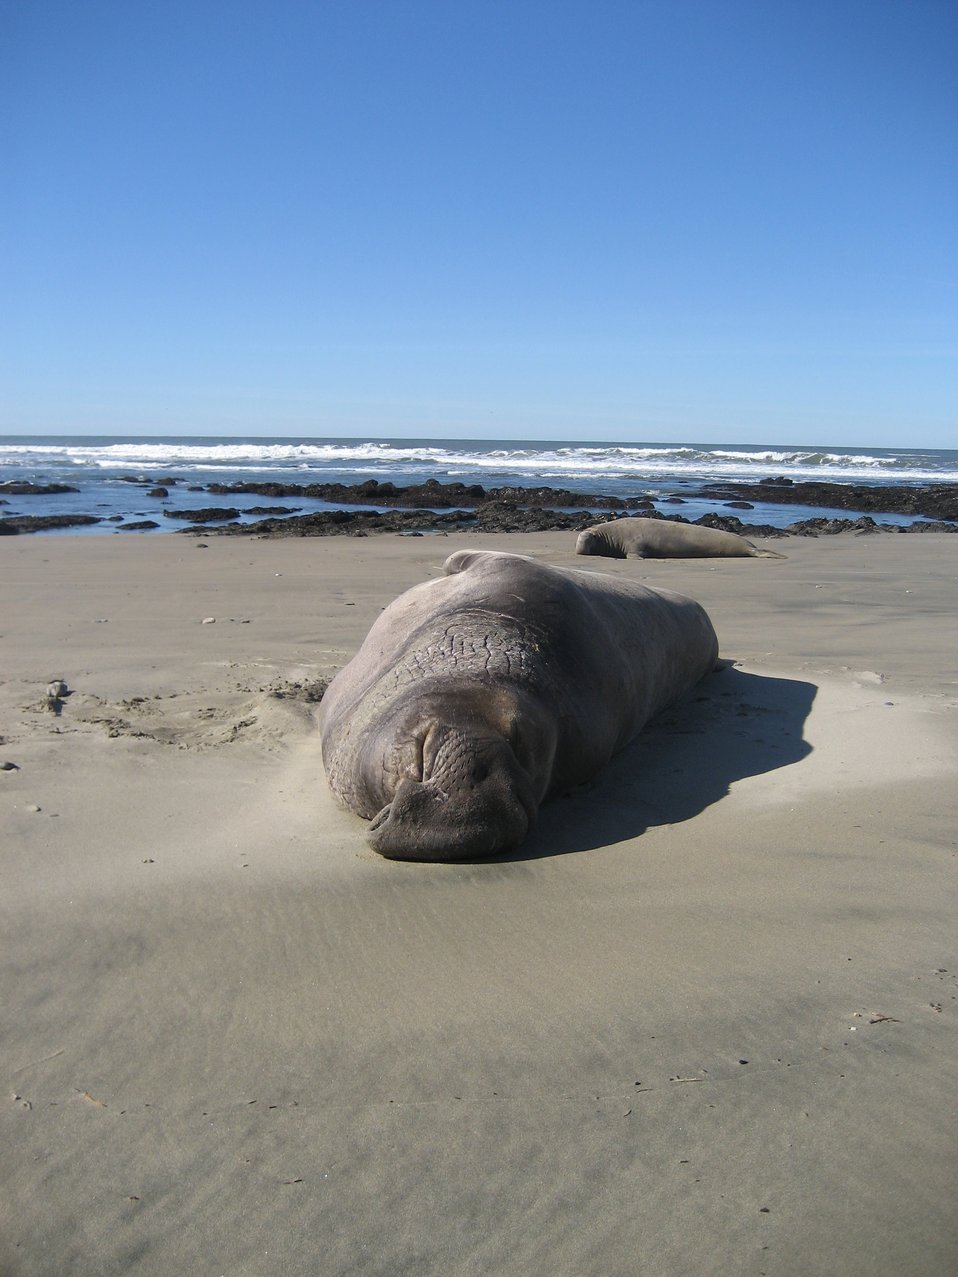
Male elephant seal hauled out on the beach at Ano Nuevo Island.